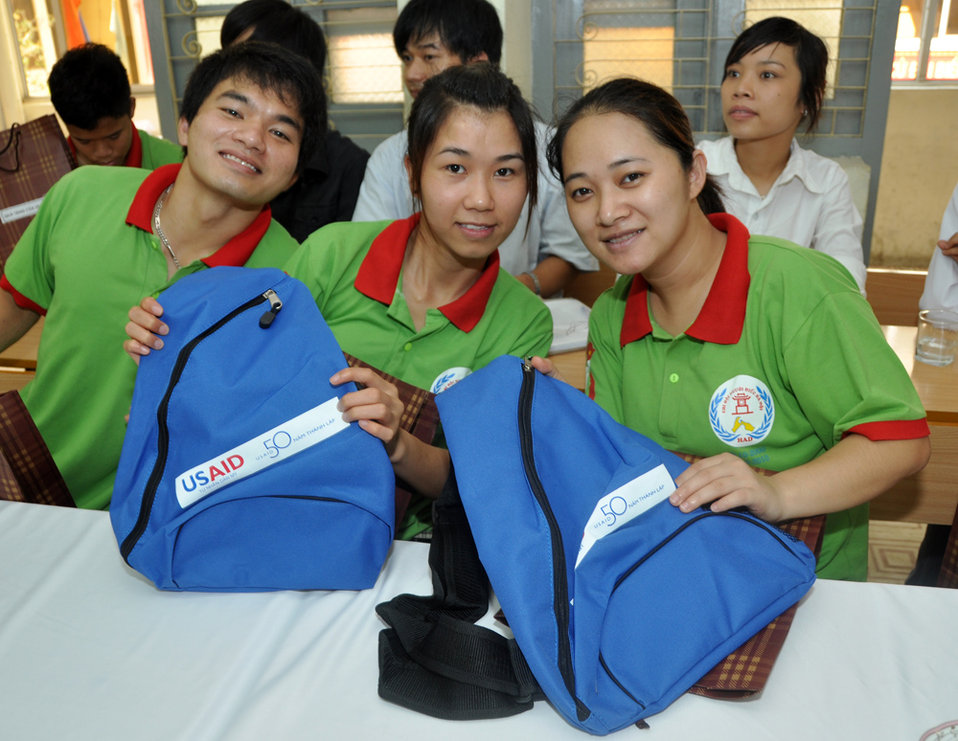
Hearing Impaired Student Graduation in Hanoi, with USAID 50th anniversary bags